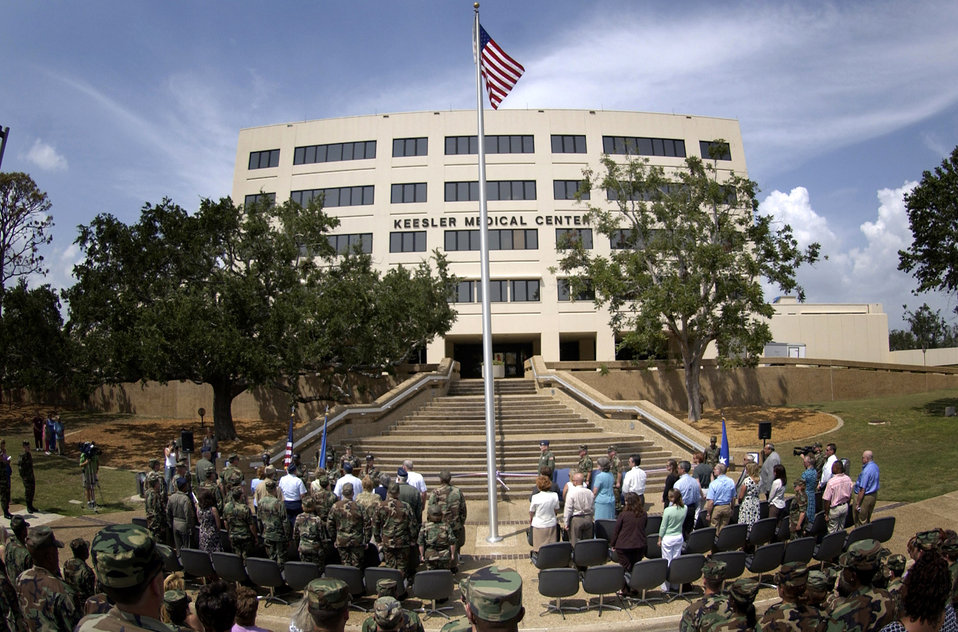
Keesler hospital takes big step forward

A group gathers for the ribbon-cutting ceremony at the Keesler Air Force Base, Miss., medical center Aug. 29, marking the transformation of the facility from an outpatient clinic to a fully functional hospital.